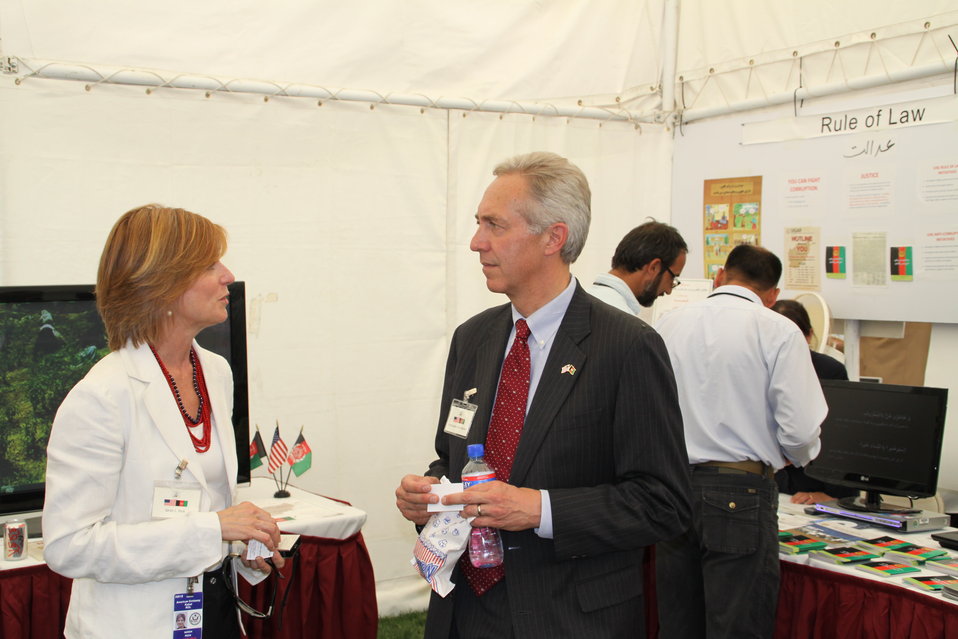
Kabul Official July 4th Celebration